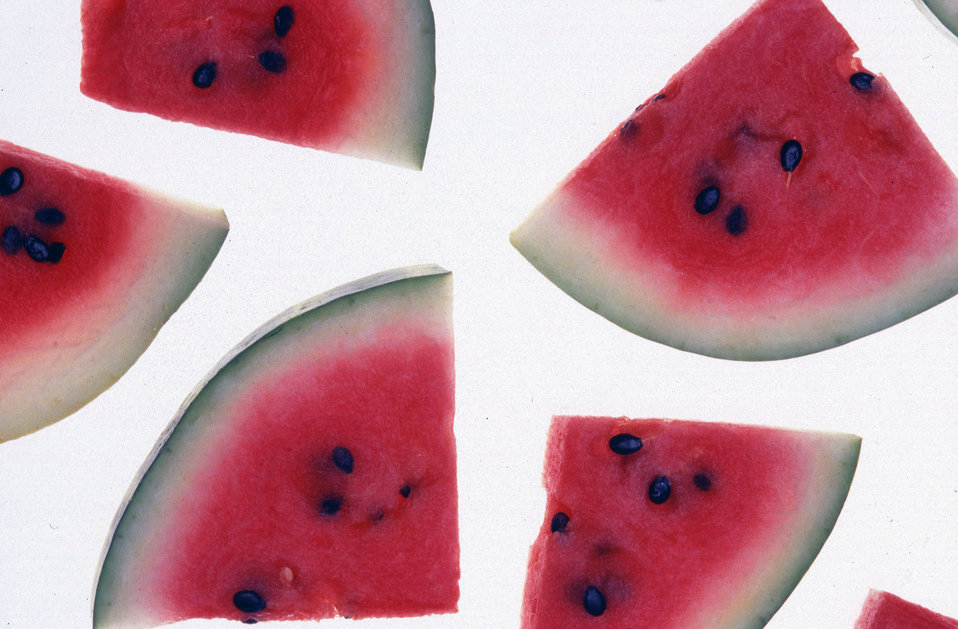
In the 1940’s, a U.S. Department of Agriculture (USDA) Agricultural Research Service (ARS) plant breeder created a better watermelon. The result was 'that gray melon from Charleston,' formally called the Charleston Gray. Its oblong shape and hard rind made it easy to stack and ship. Its adaptability meant it could be grown over a wide geographical area. It produced high yields and was resistant to the most serious watermelon diseases, anthracnose and fusarium wilt. Best of all, it tasted terrific! Today, there is hardly a watermelon variety grown that doesn't have a little Charleston Gray in its lineage.